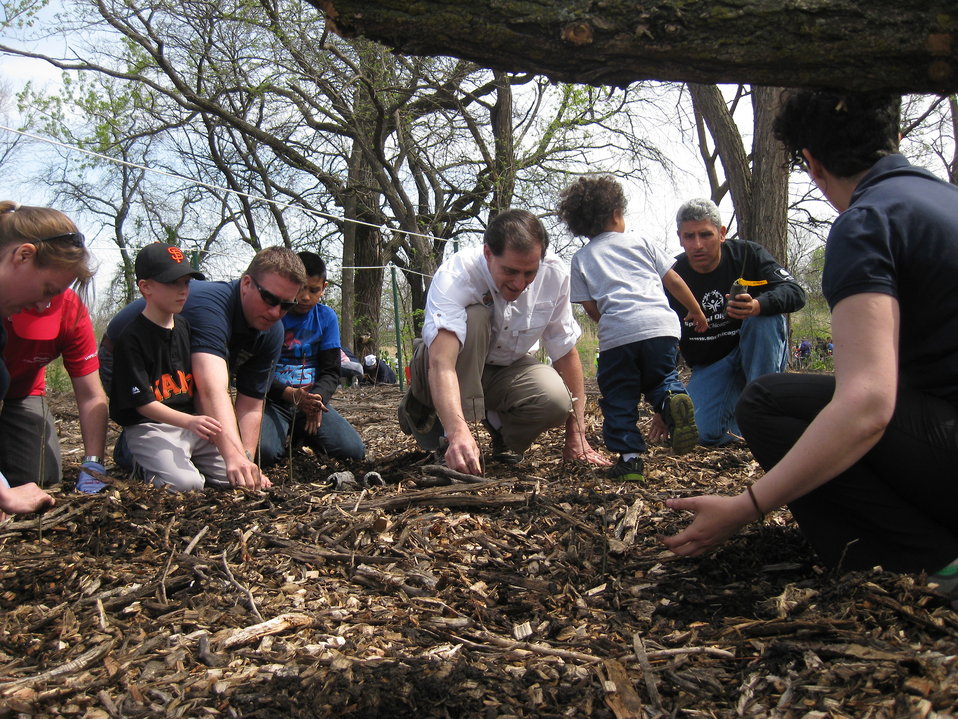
Dan Ashe with Planting Team

Chicago Park District Burnham Corridor Community Planting Day
May 10, 2014
Photo by USFWS; Louise Clemency